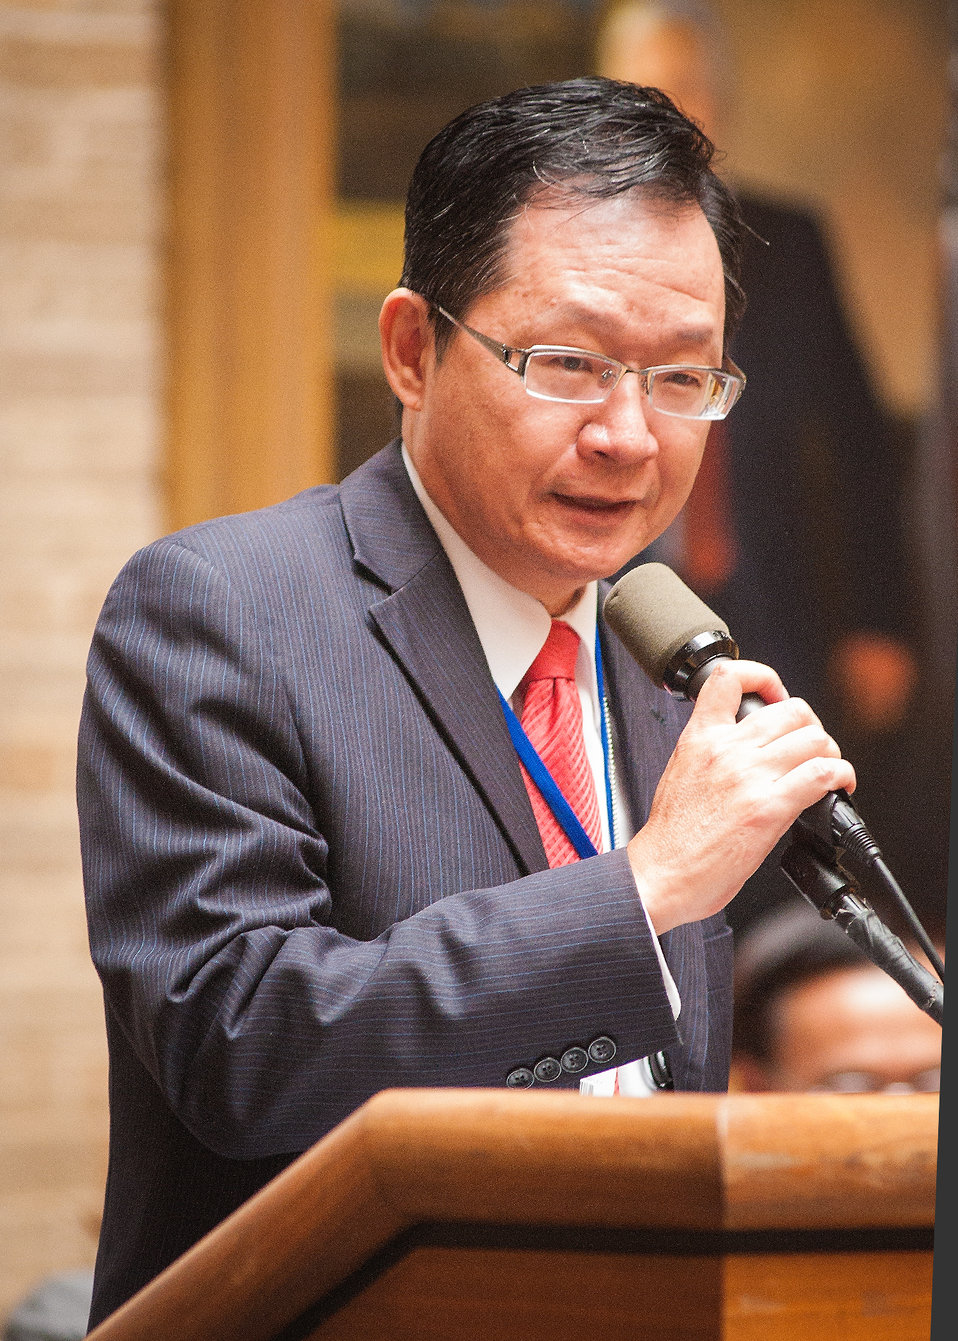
Chen-Jan Lee, Deputy Representative, Taipei Economic and Cultural Representative Office welcomes representatives of the Taiwan 2013 Goodwill Trade Mission visiting the United States Department of Agriculture in Washington, DC, Mon. Sept. 9, 2013.